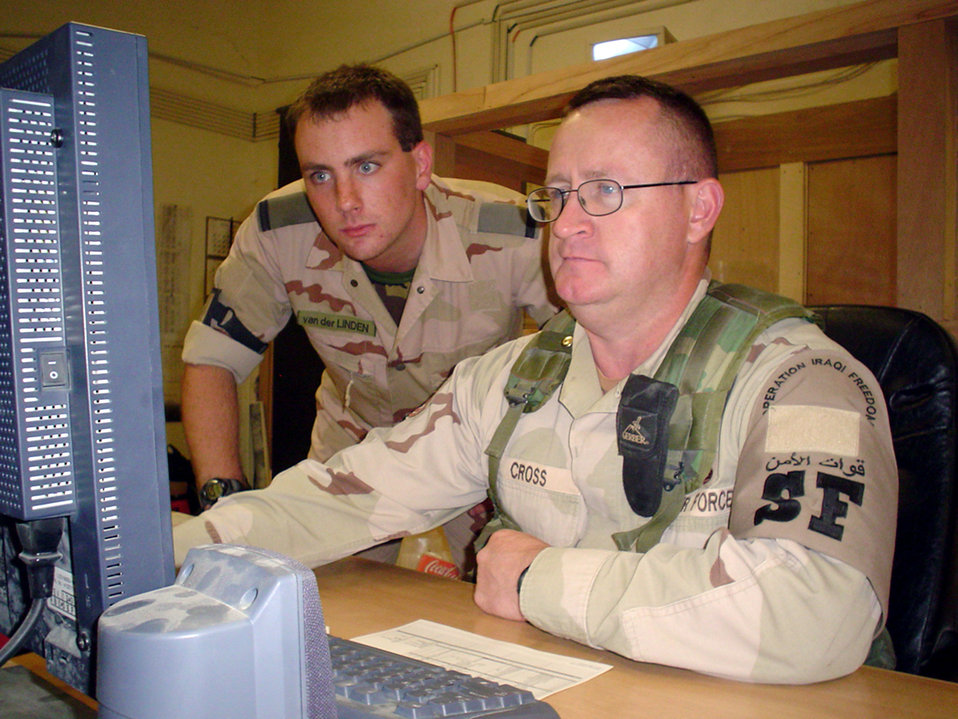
Working it out

TALLIL AIR BASE, Iraq -- Tech. Sgt. Keith Cross (right) works side-by-side with Dutch air force 2nd Lt. Bjorn van der Linden and other coalition forces in the Combined Defense Operations Center gathering information and formulating responses to threatening situations. Sergeant Cross is the center's day-shift supervisor.